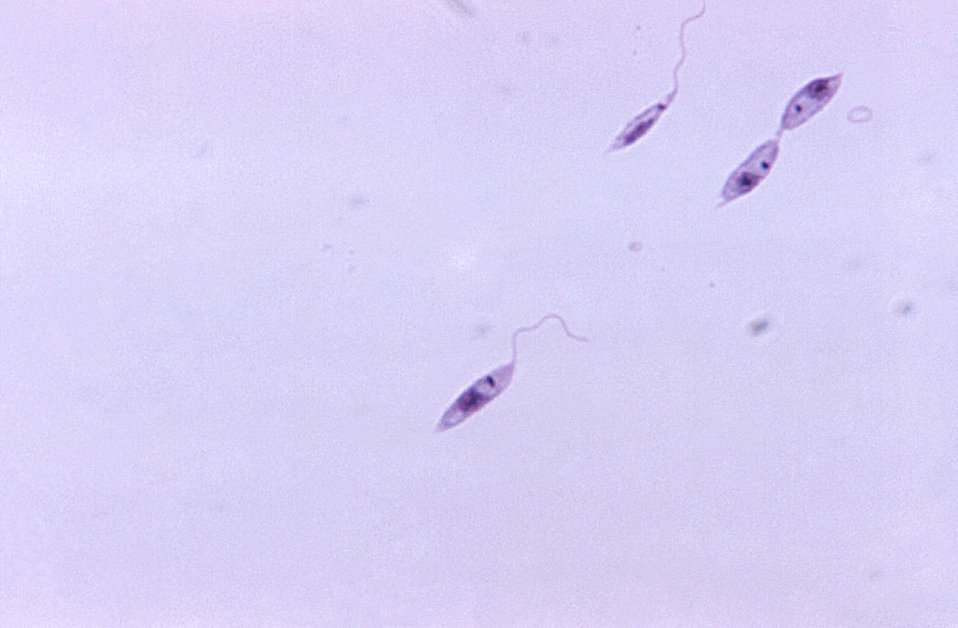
This micrograph revealed the presence of three leptomonad-staged, i.e. promastigote, Leishmania sp. protozoa.